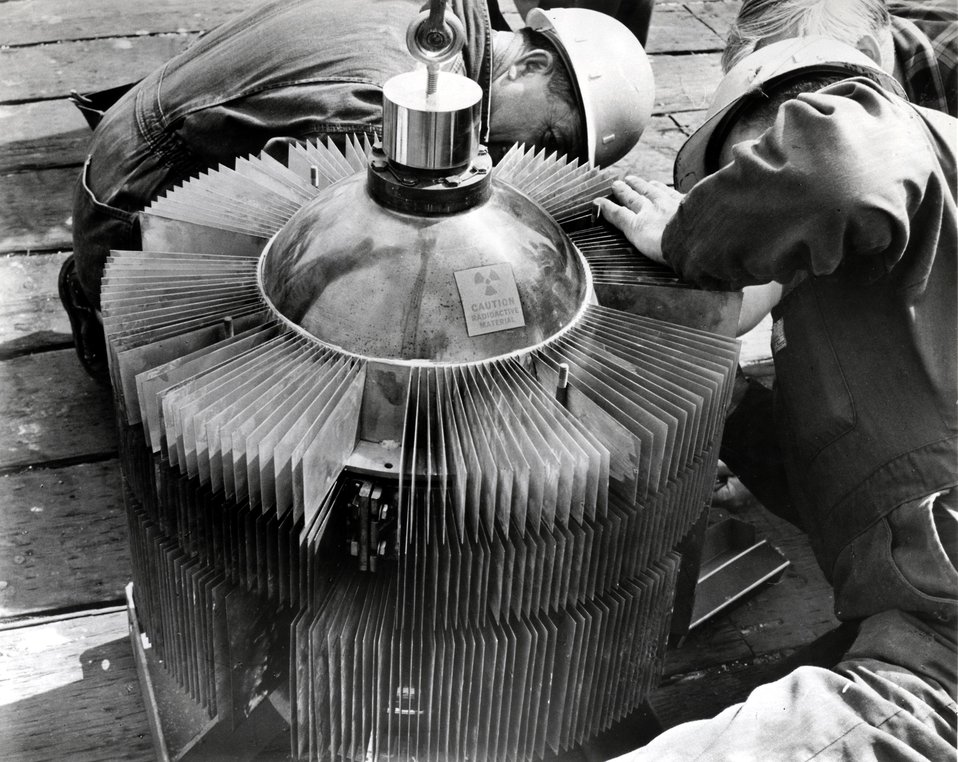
Technicians are shown here readying a nuclear-powered generator (SNAP-21) for extended testing in an ocean environment.